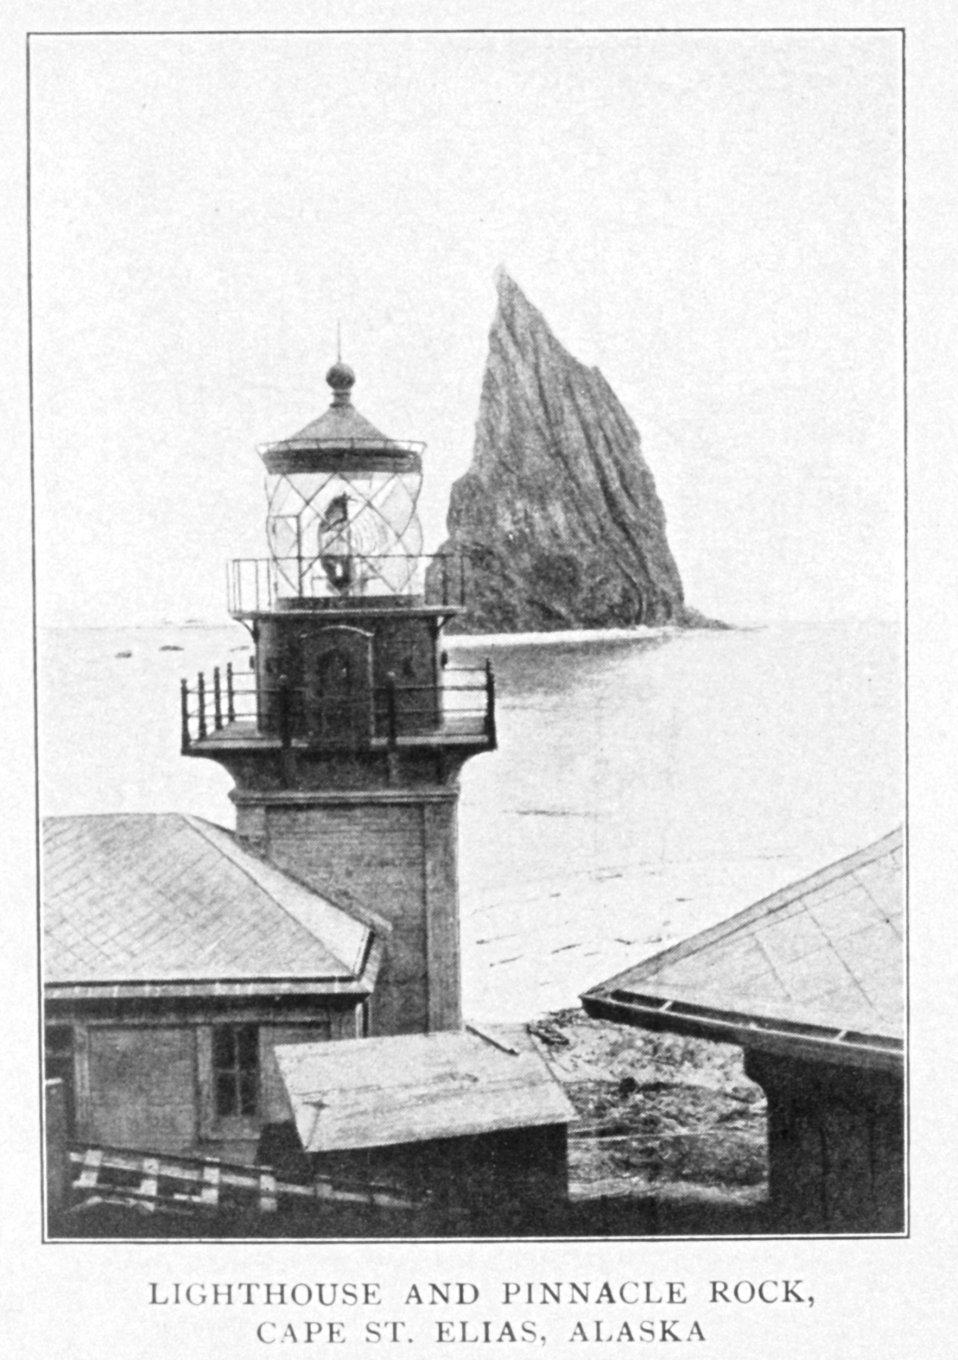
Lighthouse and Pinnacle Rock, Cape St. Elias, Alaska. In: 'Lighthouses and Lightships of the United States' by George R. Putnam, p. 148, 1917. Houghton Mifflin and Company, Boston. Library Call No. 527.7 P98.